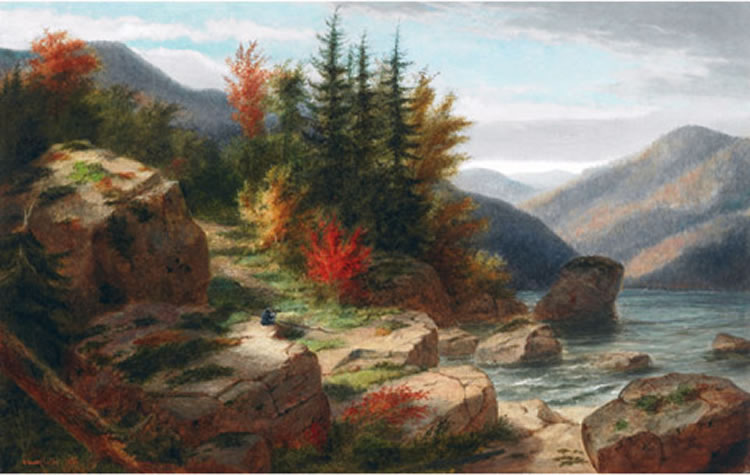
The Artist Sketching, oil painting by Cornelius Krieghoff, 14.25 x 22 in.